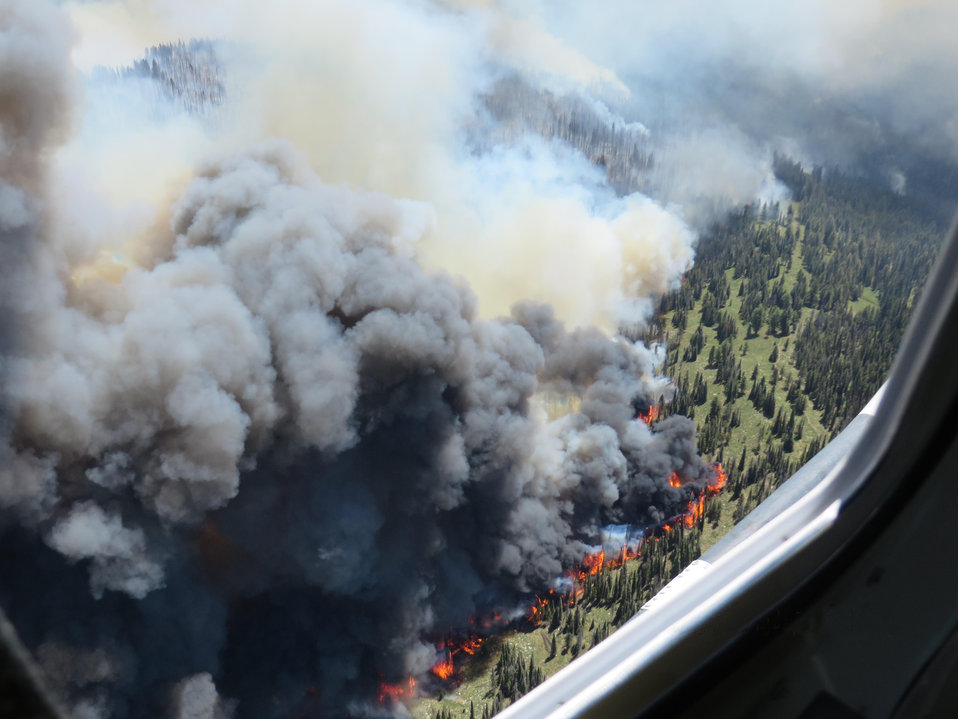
The Ridge Fire in the Boise National Forest, ID near Lowman, ID began on Jul. 16, 2013 by lightning and has consumed approximately 5,143 acres. The Ridge Fire is approximately 20% contained.